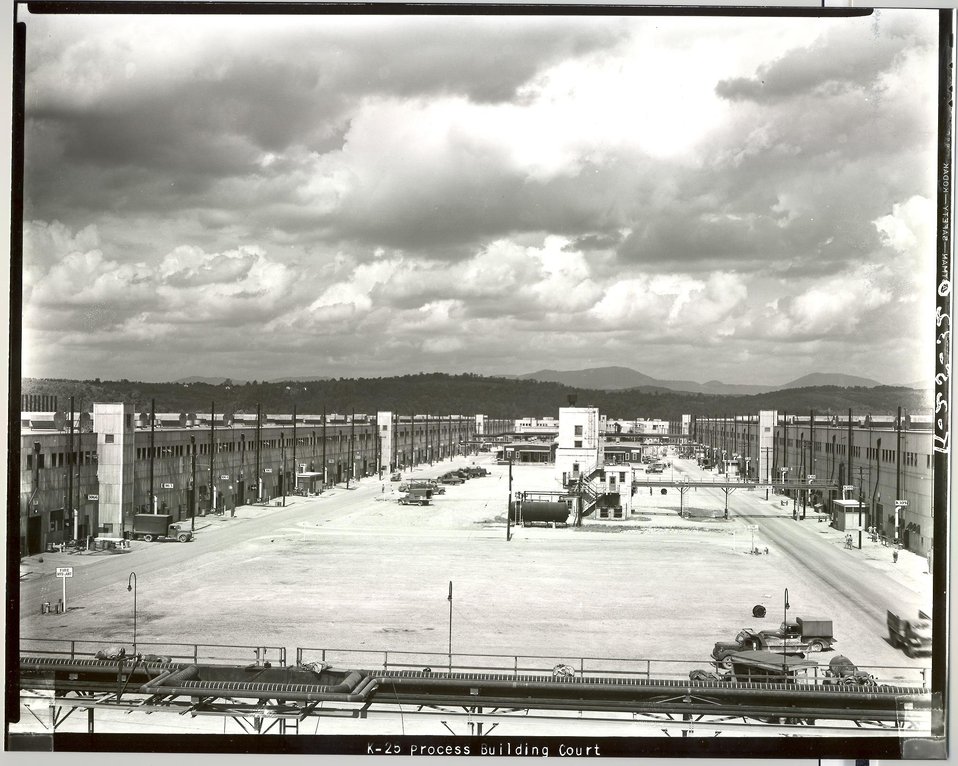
View Inside U of K-25 Building